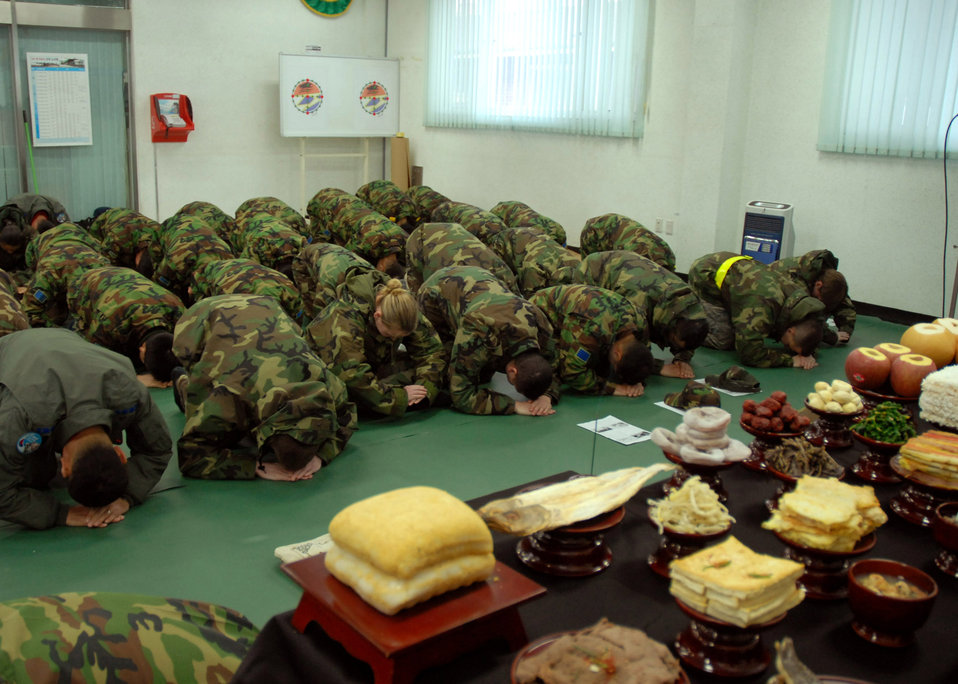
Lunar New Year event strengthens ties, cultural awareness

South Korea air force members from the 38th Fighter Group and Airmen from the 8th Fighter Wing bow for good health and prosperity in the coming year Feb. 7 during the Lunar New Year celebration held at Kunsan Air Base, South Korea. The event is one of many hosted by South Korea air force members in order to strengthen ties and gain cultural awareness with U.S. military members.